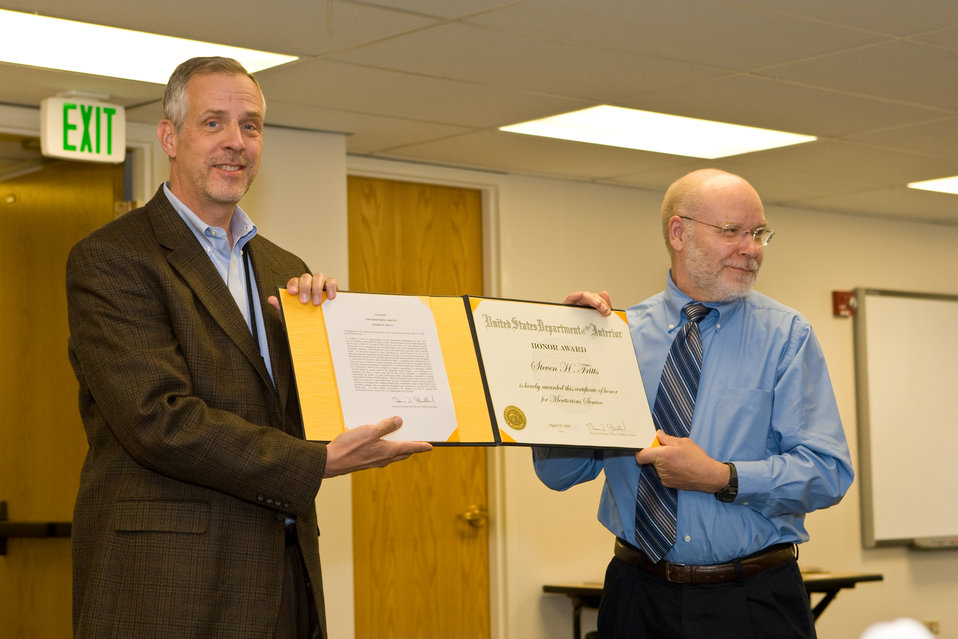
Mountain-Prairie Regional Director Stephen Guertin Presents Steve Fritts With a Department of the Interior Honor Award

On May 23rd, 2011 The U.S. Fish and Wildlife Service Mountain-Prairie Region honored three of the most influential individuals in wolf recovery in the Northern Rocky Mountains: Ed Bangs, Steve Fritts, and Margot Zallen. Ed Bangs started the event with an hour-long presentation, “Wolf Conservation: The Good, The Bad, and The Ugly.”

Following the presentation, Regional and National leadership recognized the imminent retirement of Ed, Steve, and Margot with a variety awards for their contributions.